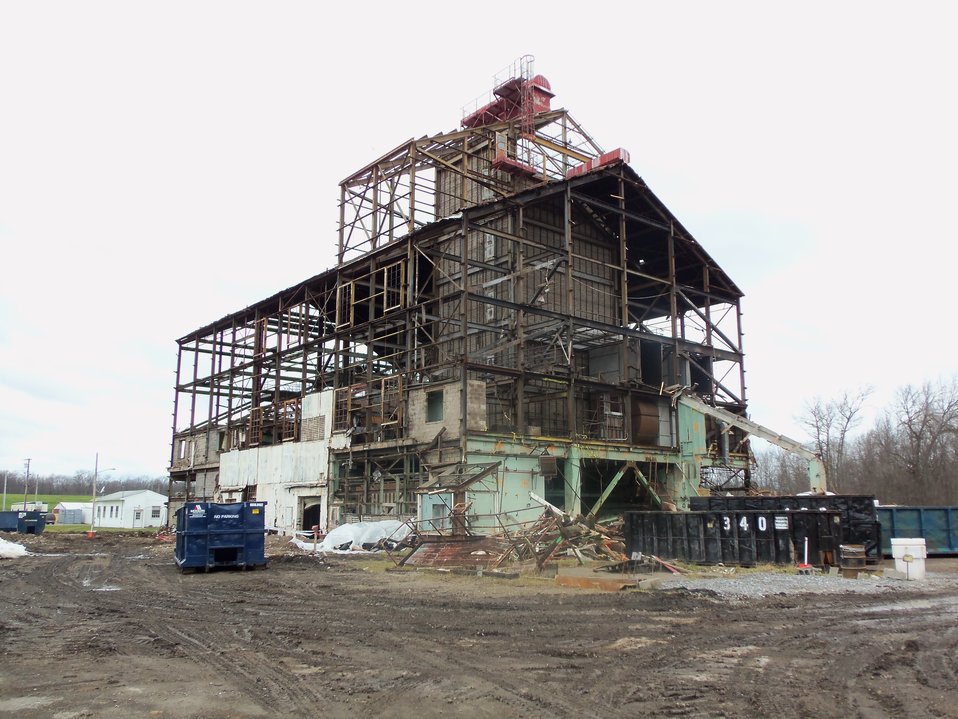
Building 401 shell.

Activities from the Niagara Falls Storage Site, which is associated with the former Lake Ontario Ordnance Works. Formerly Utilized Sites Remedial Action Program (FUSRAP), a program initiated in 1974 to identify, investigate and clean up or control sites that were part of the Nation's early atomic energy and weapons program. Activities at the sites that are eligible for FUSRAP were conducted by Manhattan Engineer District (MED) or the Atomic Energy Commission (AEC), both predecessors of the Department of Energy (DOE). The U.S. Army Corps of Engineers was assigned management of FUSRAP by Congress in 1997.